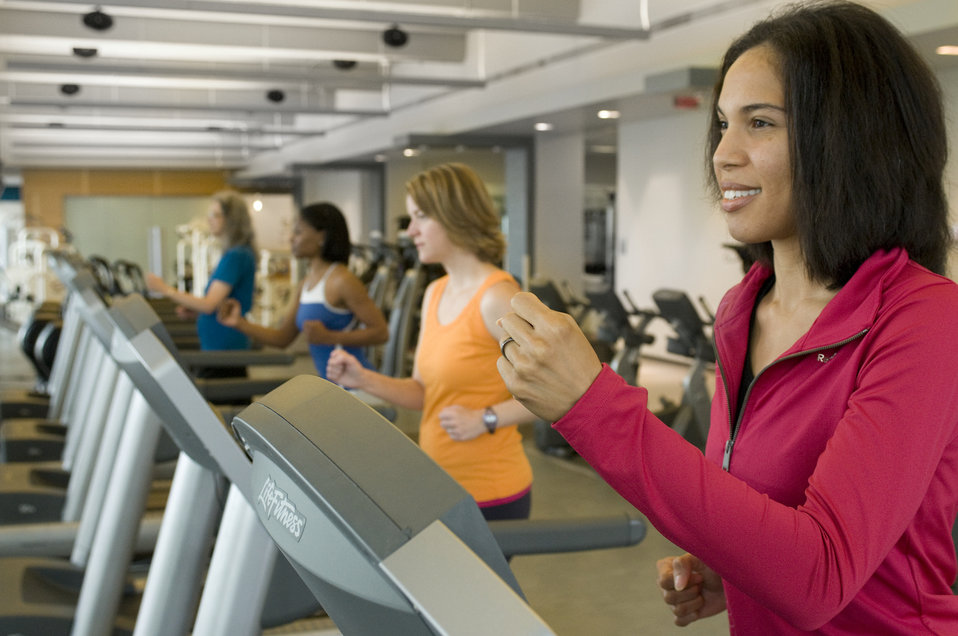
This image was captured on one of the Centers for Disease Control's (CDC) campuses, in the facility's fitness center, where a number of scheduled group classes are provided for employees' health and enjoyment. In this particular view, four women were making use of a the facility's treadmills, taking part in some aerobic exercise.